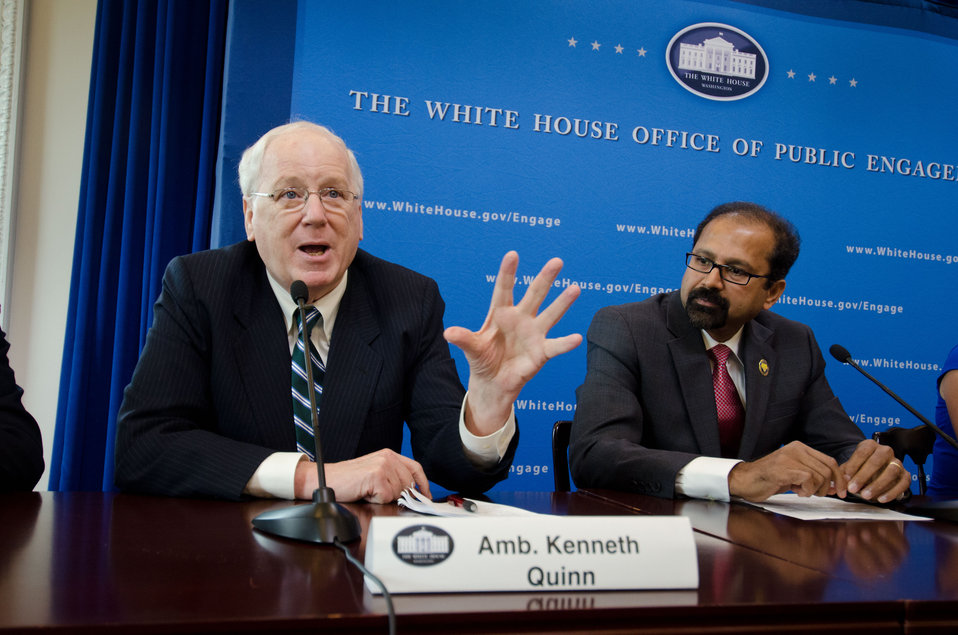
Former U.S. Ambassador to Cambodia and President of the World Food Prize Foundation Kenneth Quinn is one of eleven honorees recognized for his efforts to reduce hunger and increase food security in the U.S. and internationally at the White House Champions of Change Strengthening Food Security at Home and Abroad Event held at the White House on Thursday, September 6, 2012, in Washington, D.C.